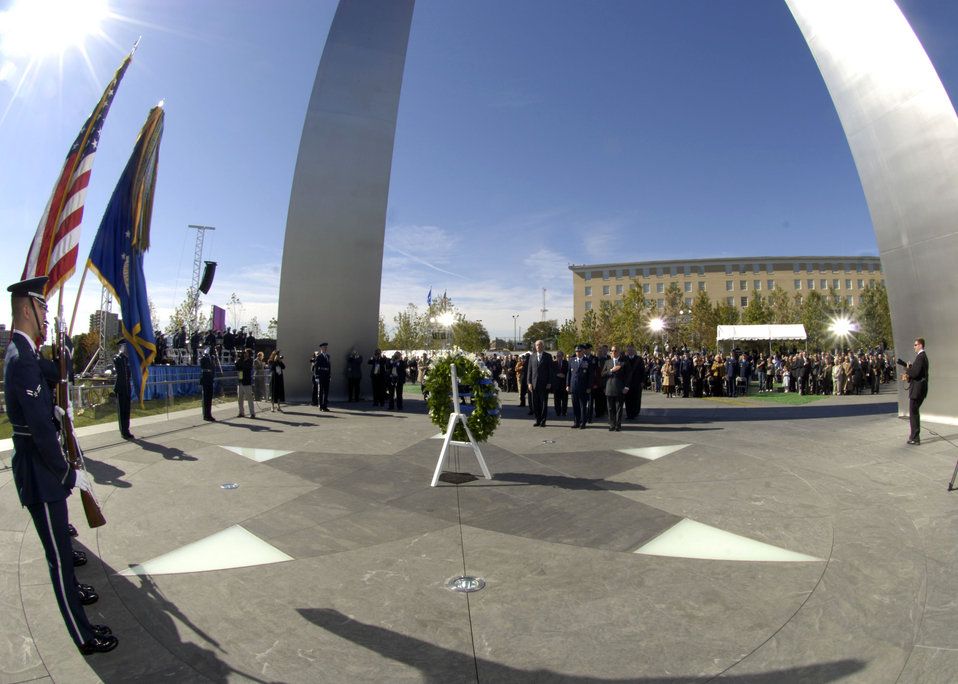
Wreath Ceremony

Secretary of the Air Force Michael W. Wynne was joined by Air Force Chief of Staff T. Michael Mosely and Air Force Memorial Foudation Chairman Ross Perot, Jr., Chief Master Sergeant of the Air Force Rodney J. McKinley and former Secretaries of the Air Force, Chief of Staffs and Chief Master Sergeants of the Air Force at the base of the new Air Force Memorial for the Wreath memorial dedicaton service for fallen Airmen past and present here in Arlington, Va., Oct. 15, 2006. On behalf of all American citizens President George W. Bush accepted the Air Force Memorial from Air Force Memorial Foundation Chairman Ross Perot Jr. during the previous day's dedication ceremony at the base of the Air Force Memorial that overlooks the Pentagon. Designed by the late James Ingo Freed the memorial with its three soaring spires inspired by the U.S. Air Force Thunderbirds bomb burst manuever, pays tribute to and honors the patriotic men and women of the U.S. Air Force and its predeccessor organizations. An open house was held near the Pentagon in conjunction with the dedication ceremony which featured performances by the U.S. Air Force Band, the U.S. Air Force Honor Guard drill team, and culminated with a concert featuring country music performer LeeAnn Womack.